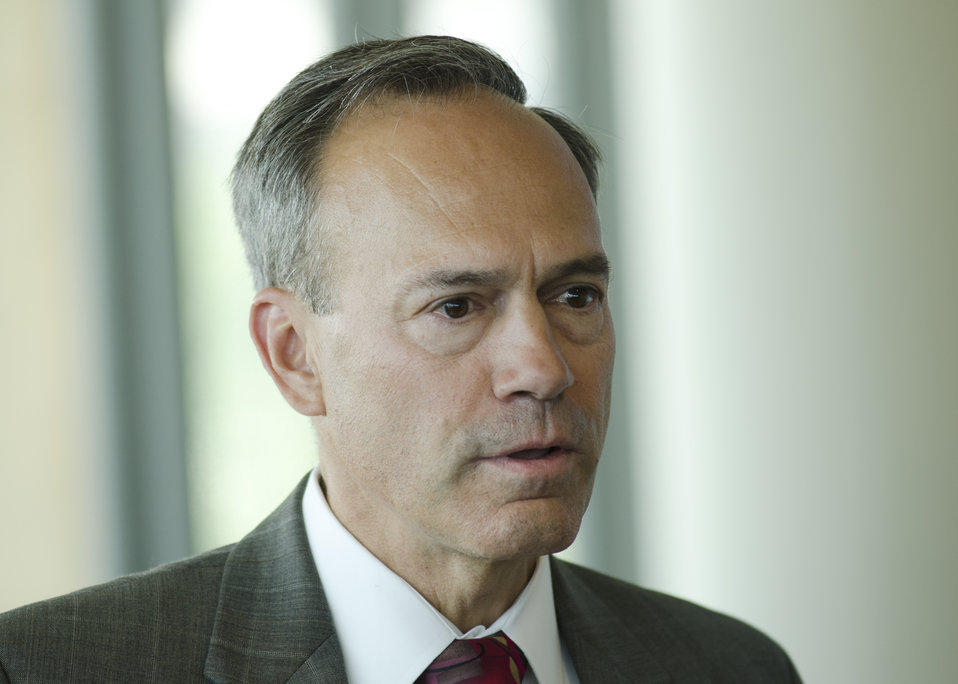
U.S. Department of Agriculture (USDA) Grain Inspection, Packers and Stockyards Administration (GIPSA) Deputy Administrator Alan Christian speaks at the first business meeting of USDA’s Council for Native American Farming and Ranching (CNAFR) held at the National Museum of the American Indian in Washington, D.C. on Tuesday, Aug. 14, 2012. CNAFR was created to advise the Secretary on ways to eliminate barriers to participation for Native American Farmers and Ranchers in USDA programs. The Council was established as part of the Keepseagle settlement, and is conducted under the oversight of USDA's Office of Tribal Relations under the Office of the Secretary of Agriculture.